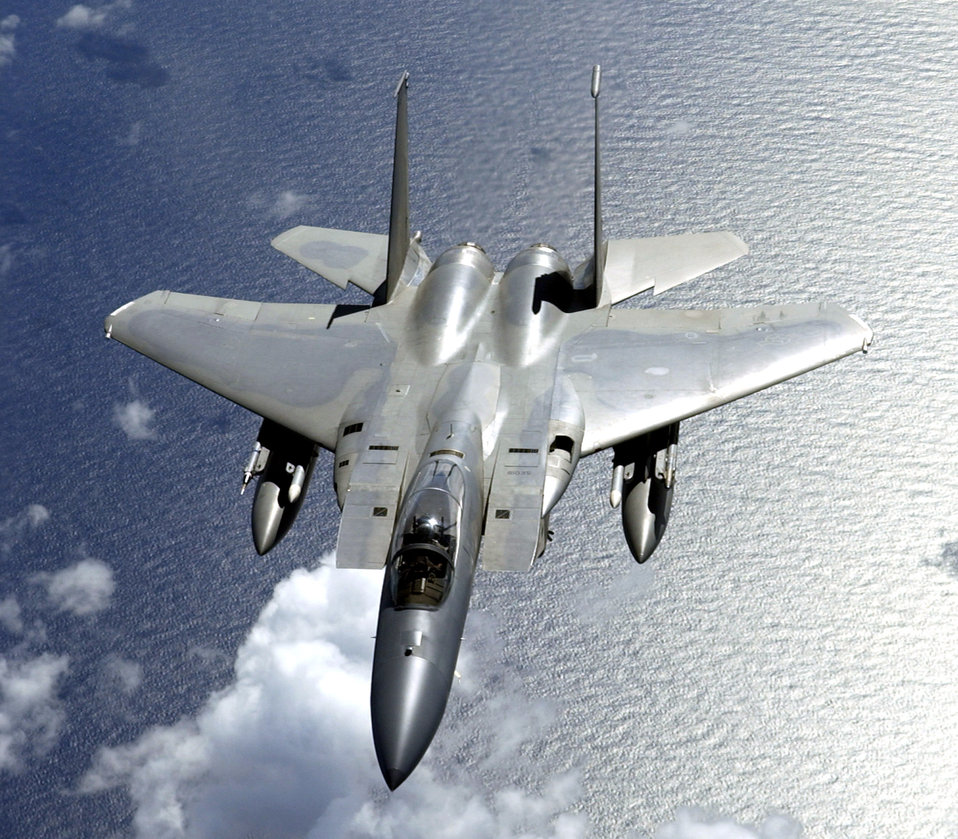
Valiant Shield gas station

An F-15 Eagle flies over the Pacific during Valiant Shield Aug. 9. The F-15 is from the 44th Fighter Squadron at Kadena Air Base, Japan. During the exercise, Air Force aircraft and Airmen from stateside bases and Kadena AB will comprise part of an expeditionary air wing based at Andersen Air Force Base, Guam. These forces will participate in integrated joint training with Navy and Coast Guard forces.